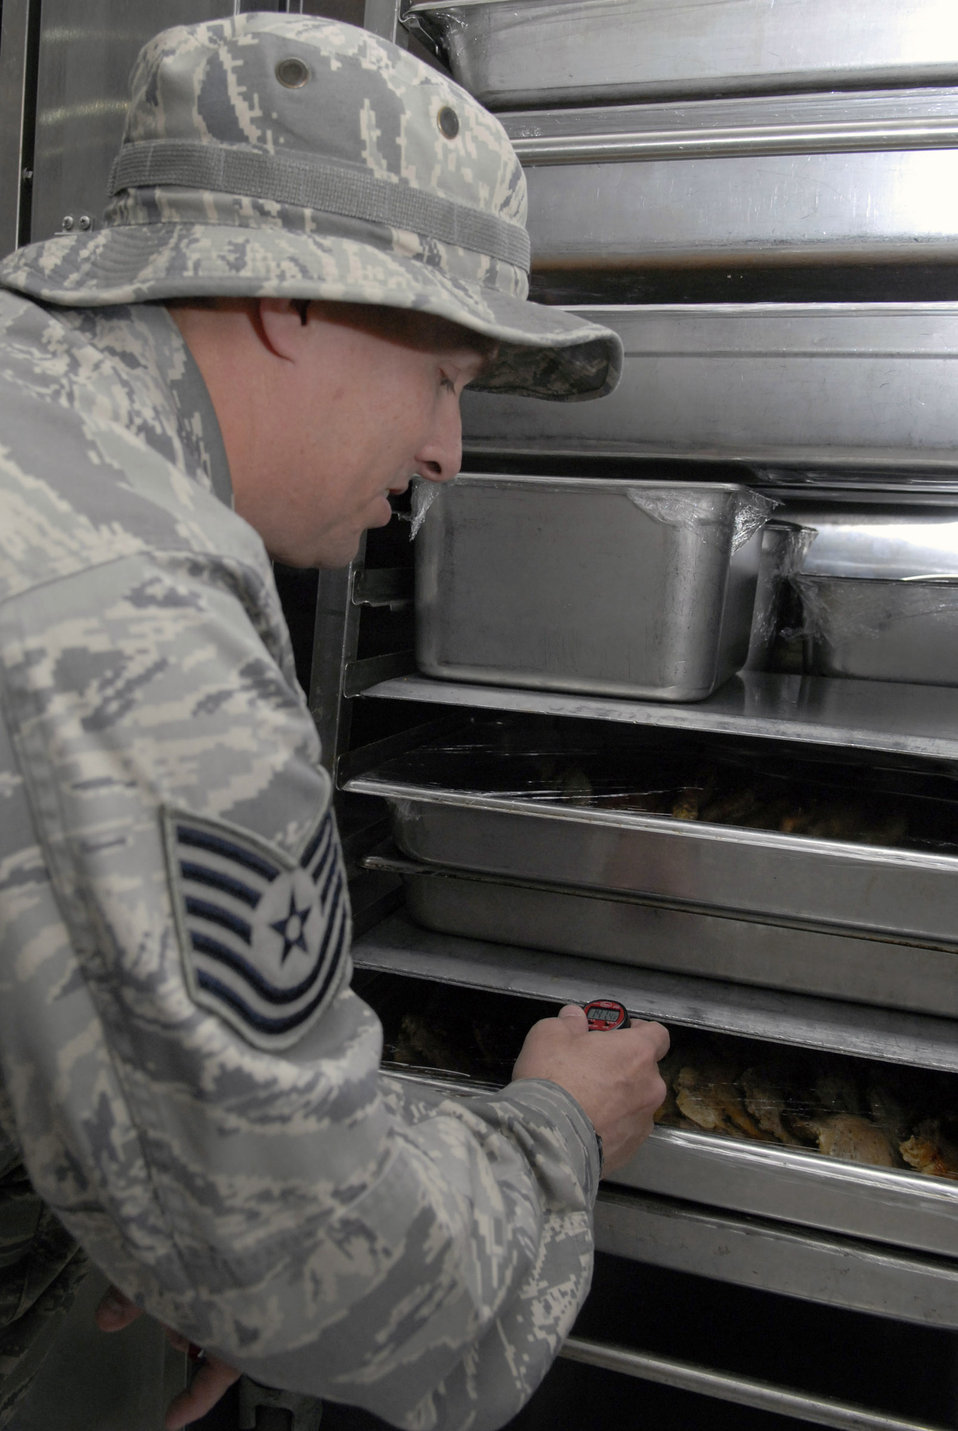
Public health maintains high standards, healthy force

Tech. Sgt. Duwayne Foster takes the temperature of food about to be served to ensure it is heated to the proper temperature during the monthly dining facility inspection April 18 at an air base in Southwest Asia. The public health office inspects the dining facilities, checks personnel medical records, and provides medical intelligence for forward deployers. Sergeant Foster is the 379th Expeditionary Medical Group NCO in charge of public health and hails from Mobile, Ala. He is deployed from Keesler Air Force Base, Miss.